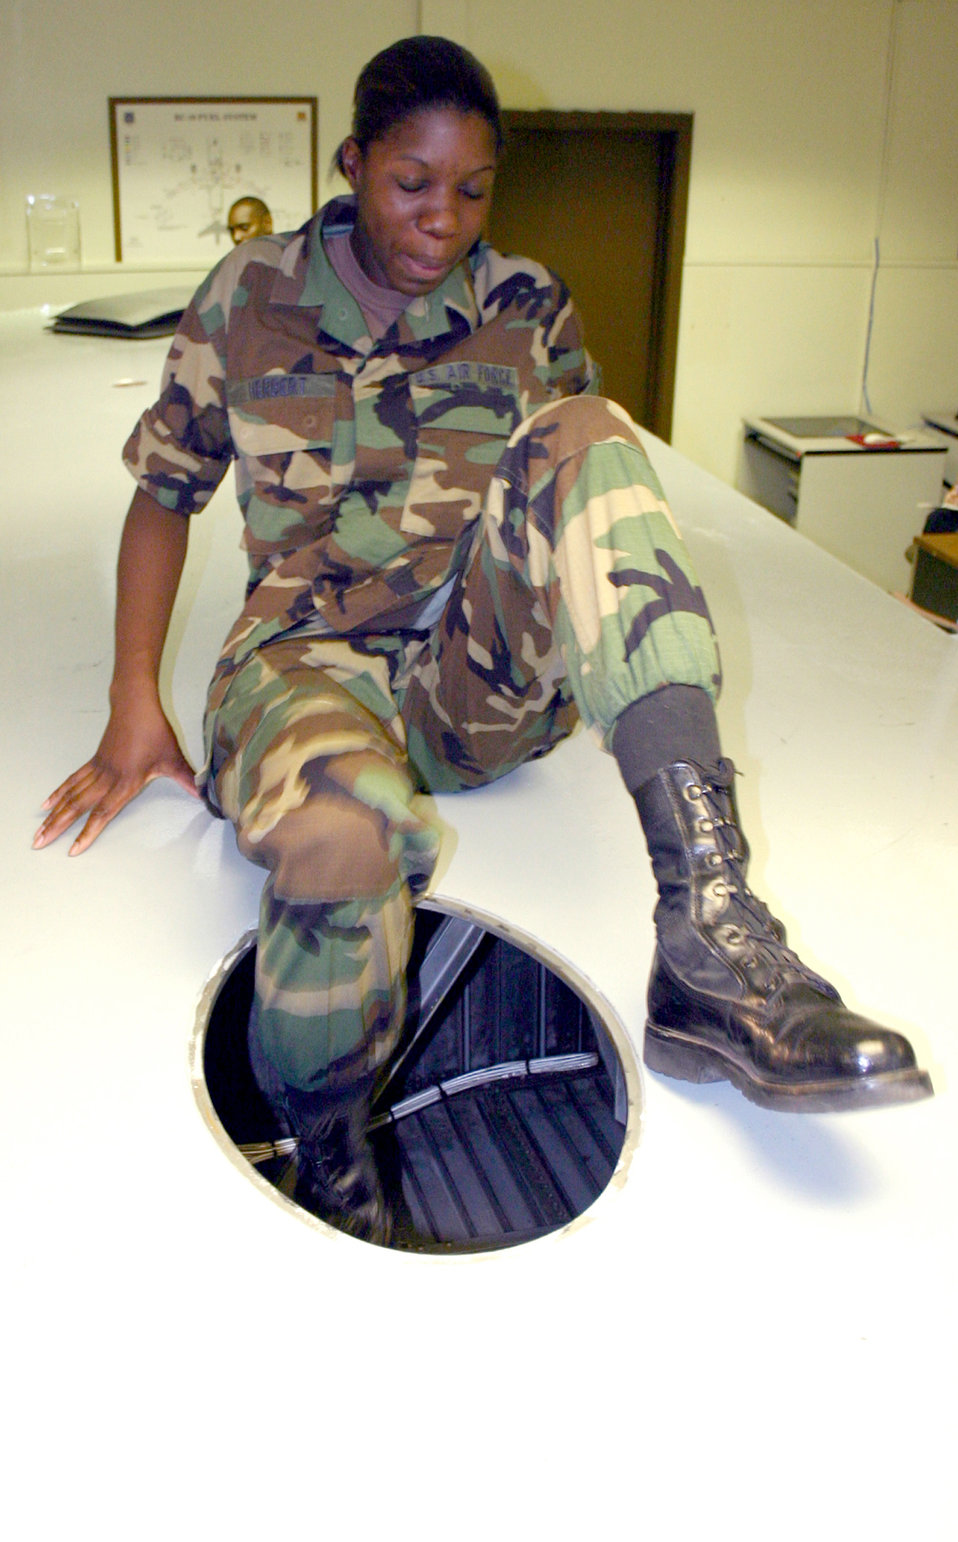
Promises

SHEPPARD AIR FORCE BASE, Texas -- Airman Diana Herbert climbs into the fuel cell of a C-130 Hercules trainer. Airman Herbert promised her brother, Pfc. Rayshawn Johnson, that she would enlist in the military. She recently graduated from the aircraft fuels systems apprentice course here.